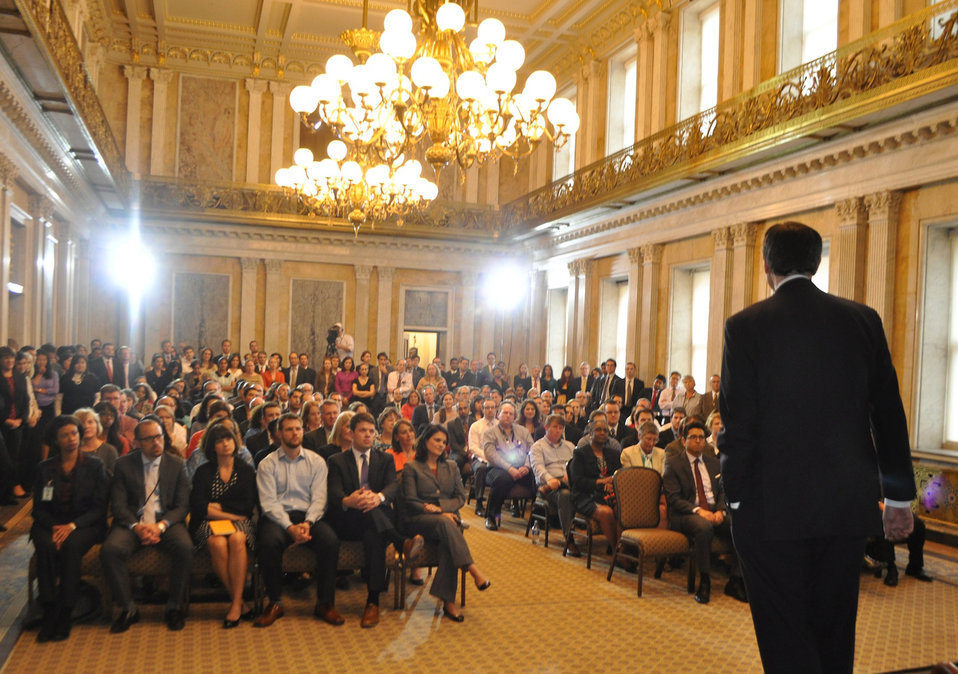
Secretary Lew welcomes employees back to work

During a town hall meeting the day the government reopened, Secretary Lew thanked Treasury employees for their patience during the government shutdown, commitment to public service and dedication to Treasury’s mission to help make our country stronger. October 17, 2013